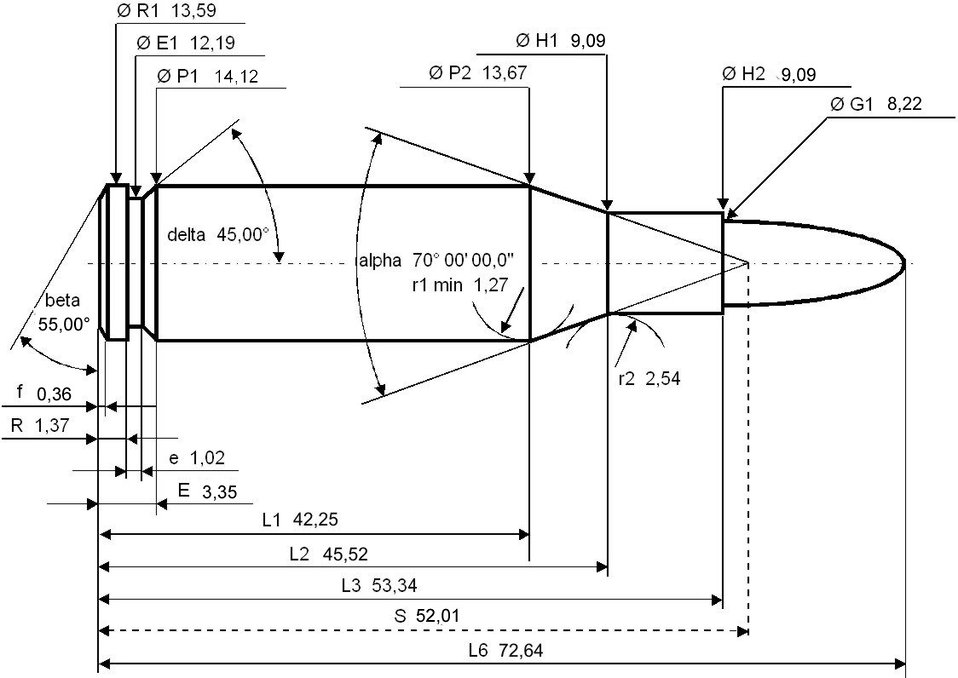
.325 WSM-cartridge